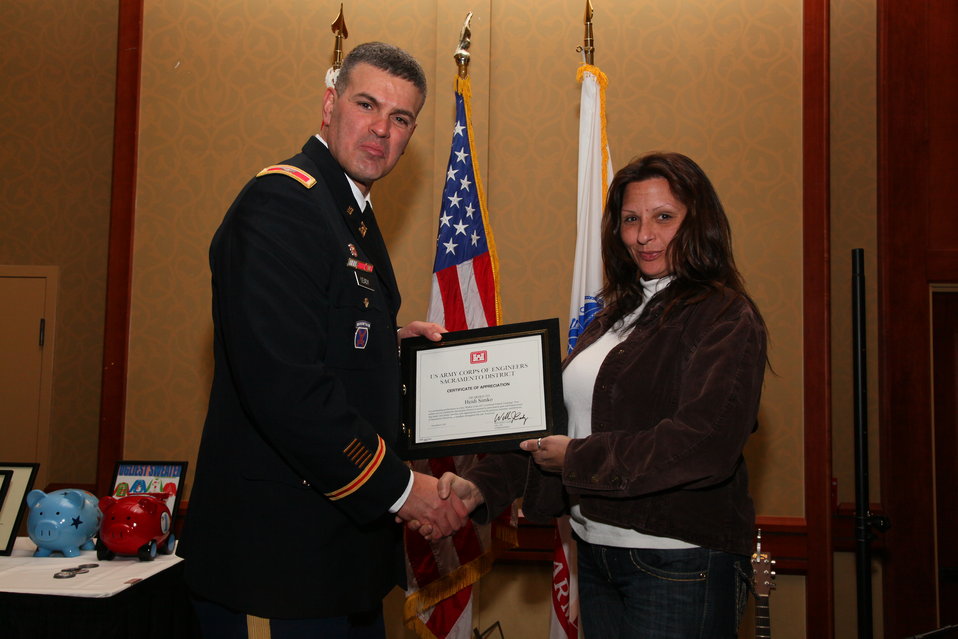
Sacramento District Holiday Party 2011